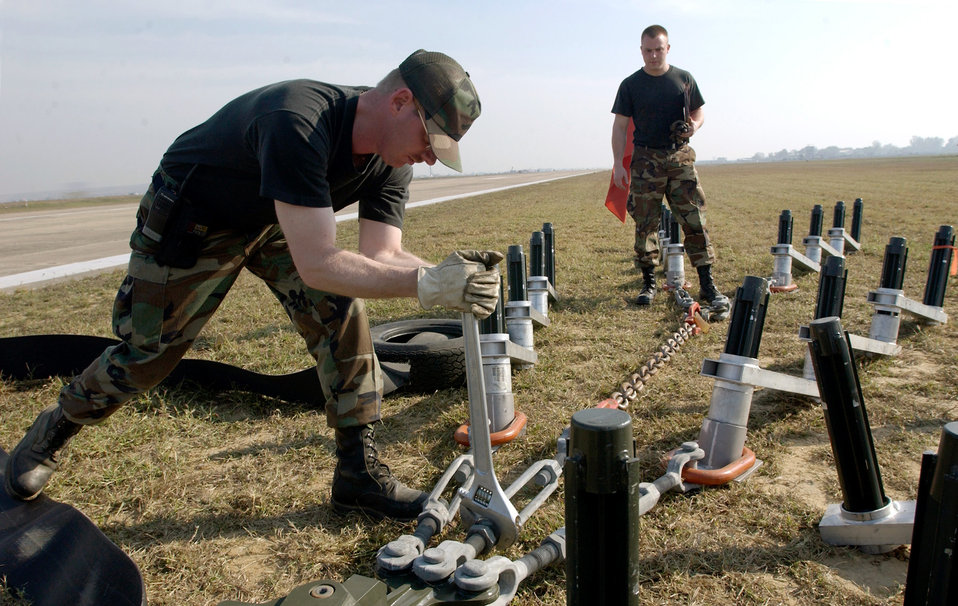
Setting the barrier

GWALIOR AIR FORCE STATION, India -- Tech. Sergeant John Freischmidt tightens the turnbuckle on a section of the Mobile Aircraft Arresting System barrier here. The MAAS is designed to ensure U.S. pilots land safely in the event of an in-flight emergency. Sergeant Freischmidt is an electrical power production technician deployed here from Elmendorf Air Force Base, Alaska. He is taking part in Cope India 04.